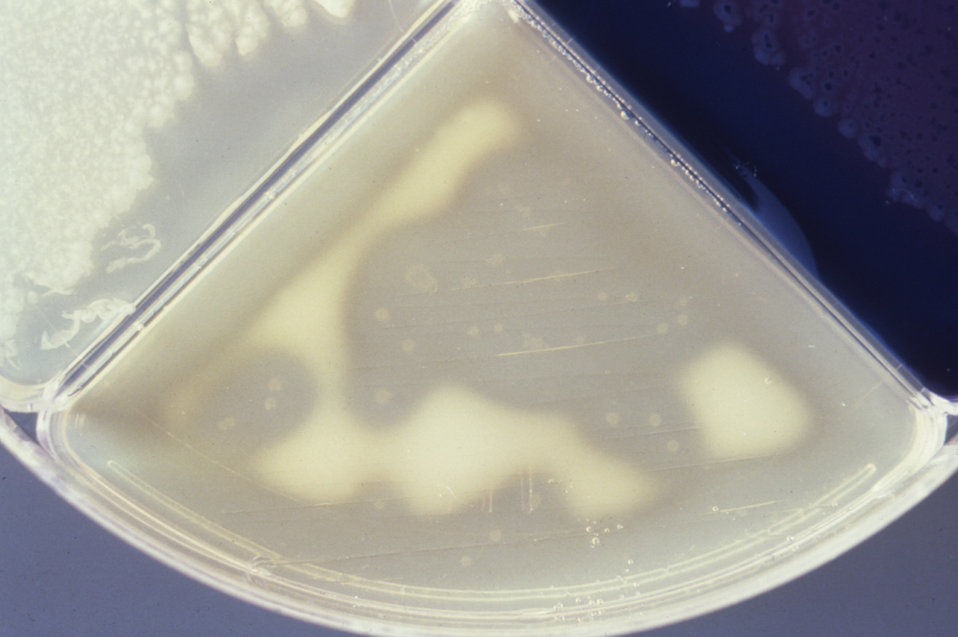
This image depicts reactions within a Presumpto II quadrant plate used in a mycology lab procedure.